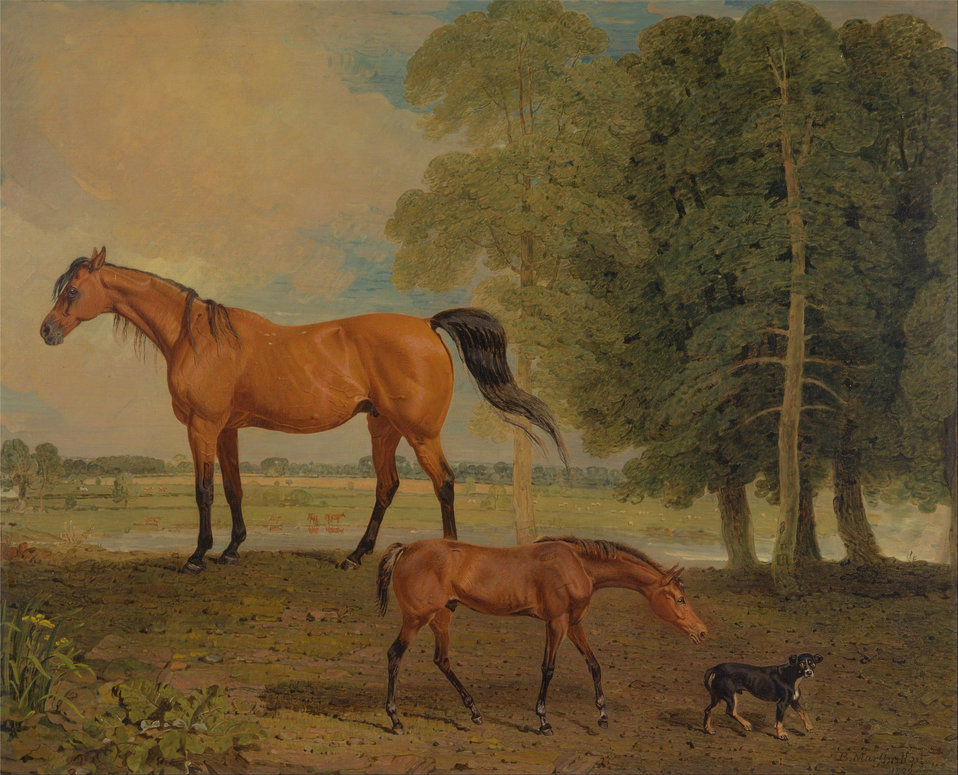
Benjamin Marshall - Broodmare with Foal, and a Terrier - Google Art Project